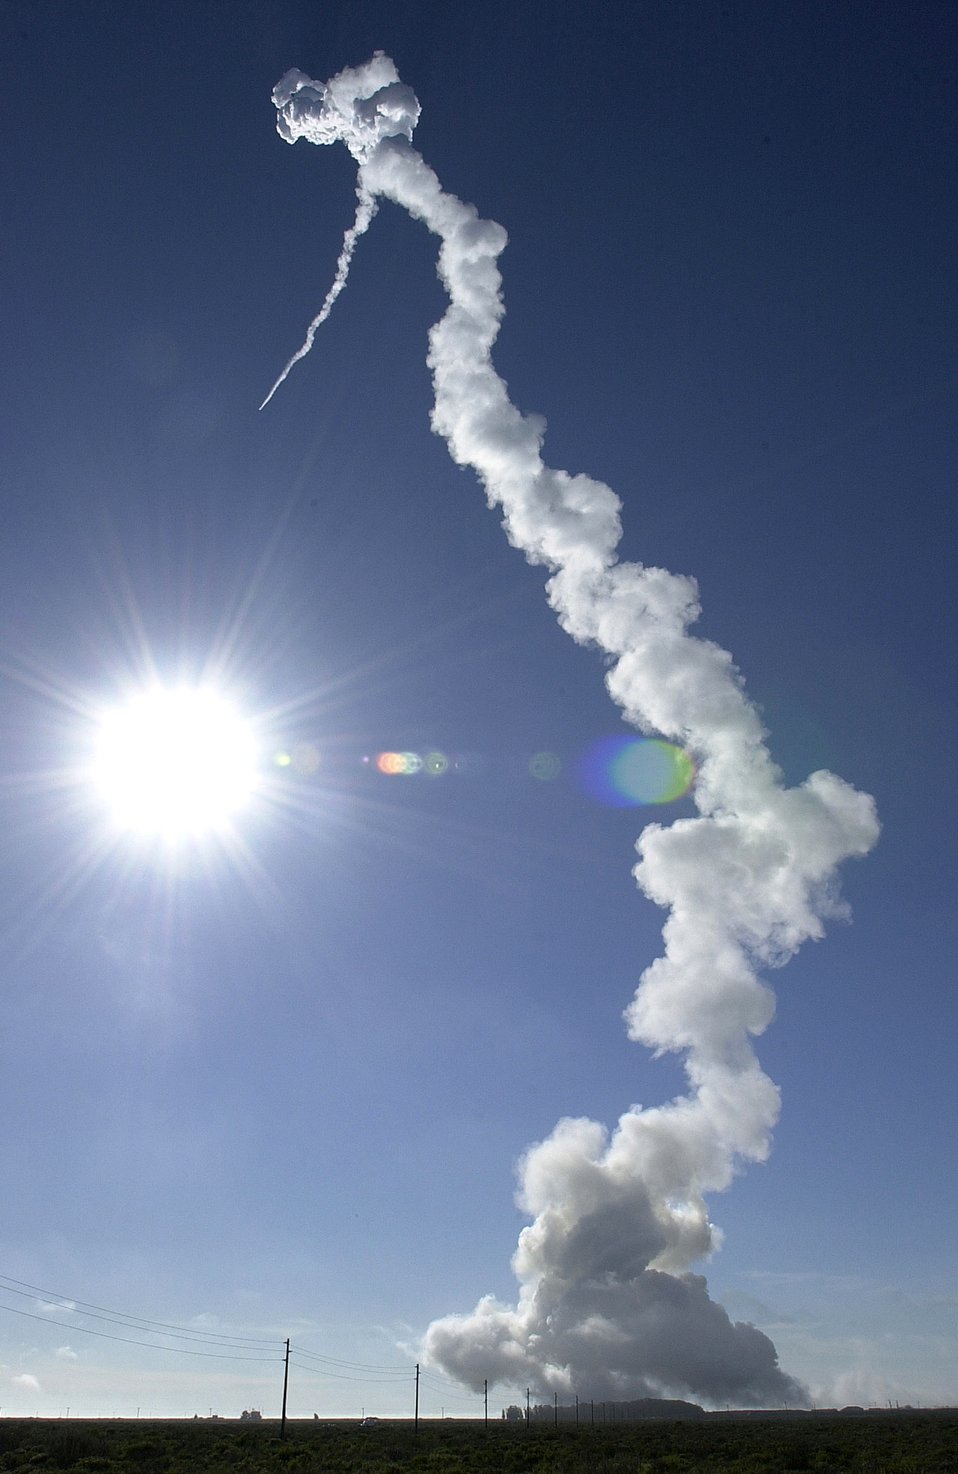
Vandenberg successfully launches Delta II

A Delta II rocket carrying a National Reconnaissance Office satellite successfully launches Dec. 14 from Space Launch Complex-2 at Vandenberg Air Force Base, Calif.